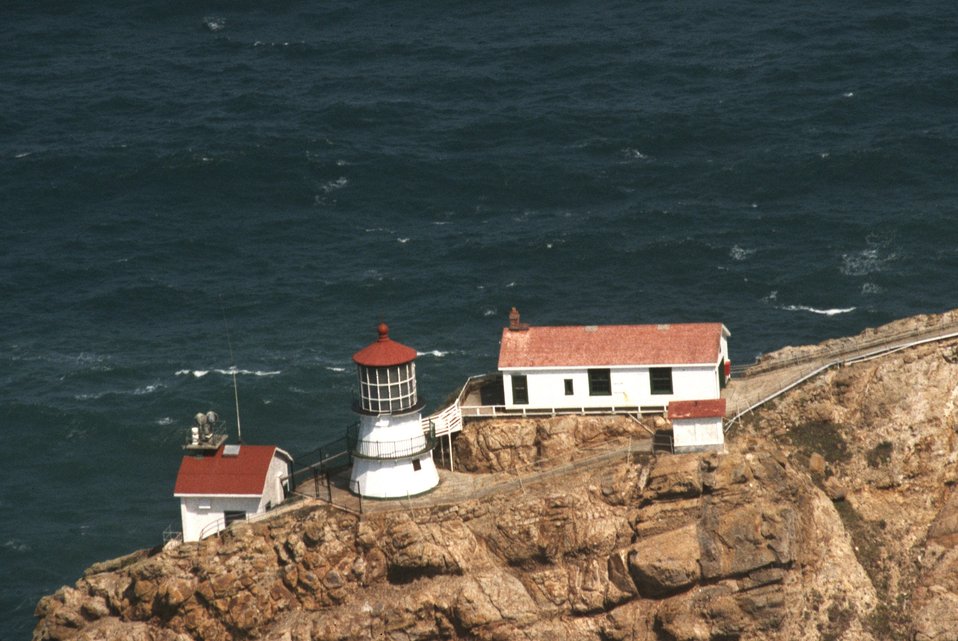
Point Reyes Lighthouse